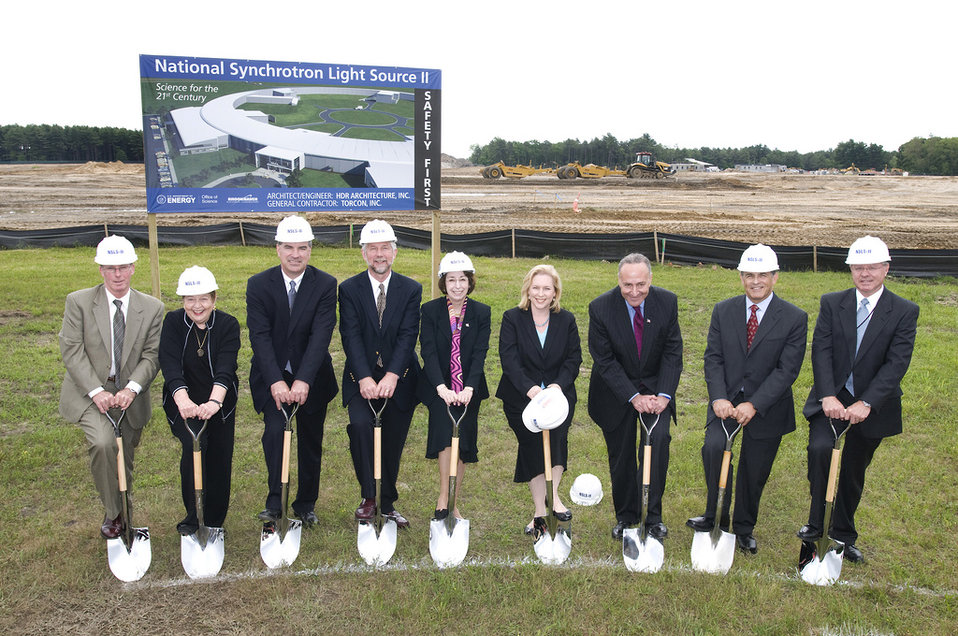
ON JUNE 15,2009, WAS THE CELEBRATION OF THE START OF CONSTRUCTION FOR THE NATIONAL SYNCHROTRON LIGHT SOURCE II (NSLS-II) AT BROOKHAVEN NATIONAL LABORATORY.

NSLS-II will be an advanced, third-generation medium energy storage ring that will provided sophisticated, new tools for discovery- class science. Pictured left to right: Suffolk Country Legislator Dan Losquadro; Michael Holland, Frank Crescenzo, both of DOE; Steve Dieker, BNL; Sam Aronson, BNL Director: Patricia Dehmer, DOE ; Ron Townsend , Battelle; Congressman Tim Bishop.